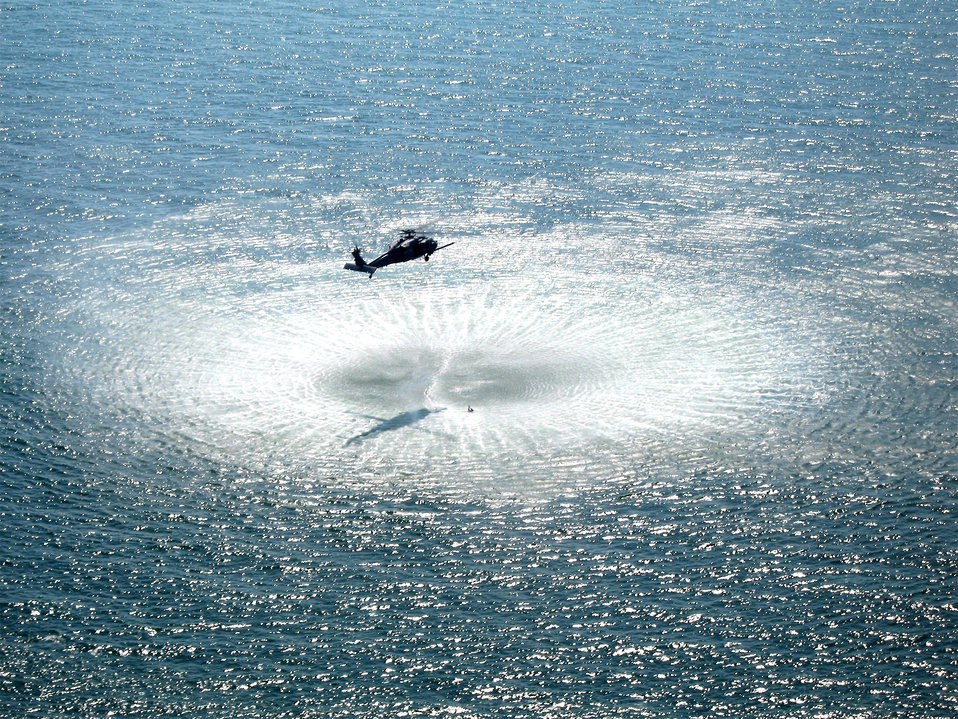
Air Force Reserve rescue crews save missing boater

Air Force Reserve rescuers recover a boater who was missing for 18 hours in the Atlantic Ocean just off the coast of Jacksonville, Fla., Oct. 1.